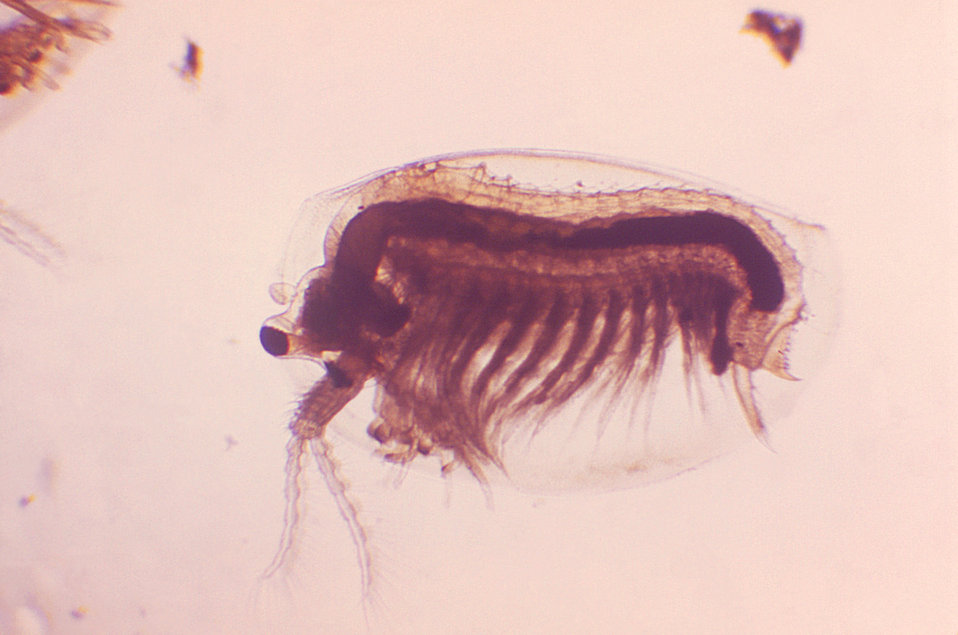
Under a very low magnification of 10X, this image depicts an enlarged left lateral view of a clam shrimp, Eulimnadia texana, that had been found inhabiting a freshwater weatherpool atop Stone Mountain, located in Dekalb County, Georgia.